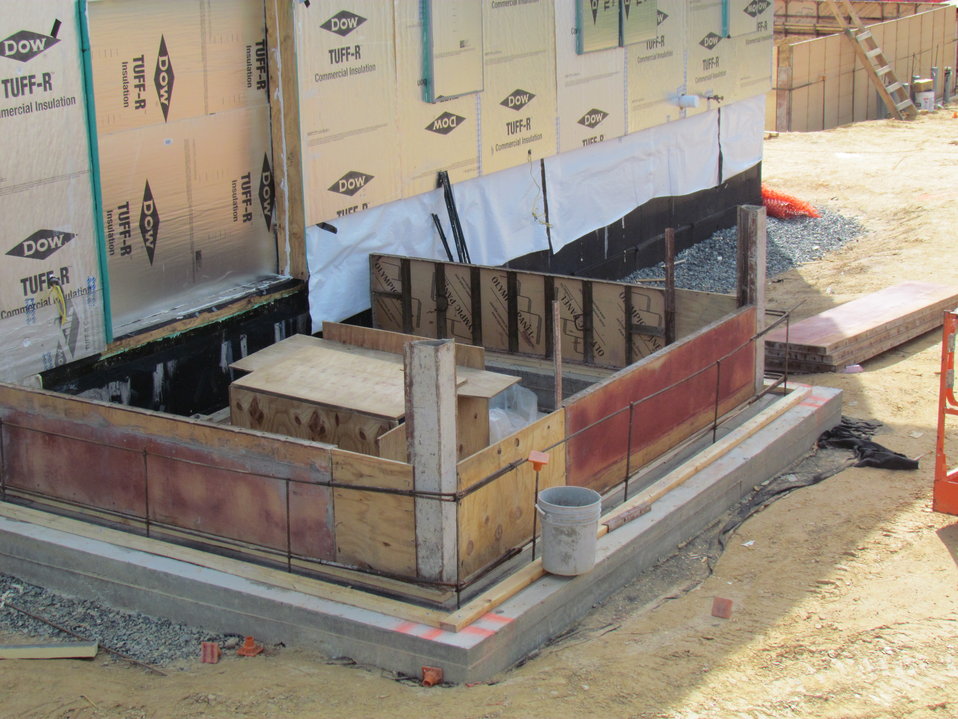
Net-Zero Energy Residential Test Facility - Photo showing plywood forms being put in place for porch knee walls.